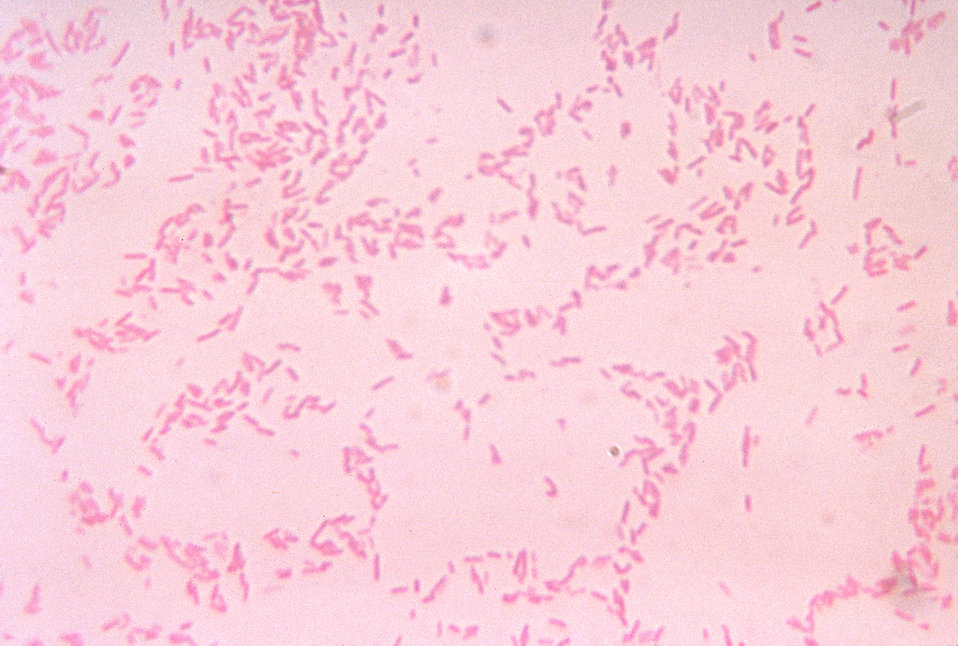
This micrograph depicts Bacteroides fragilis ss. fragilis bacteria cultured in blood agar medium for 48 hours.